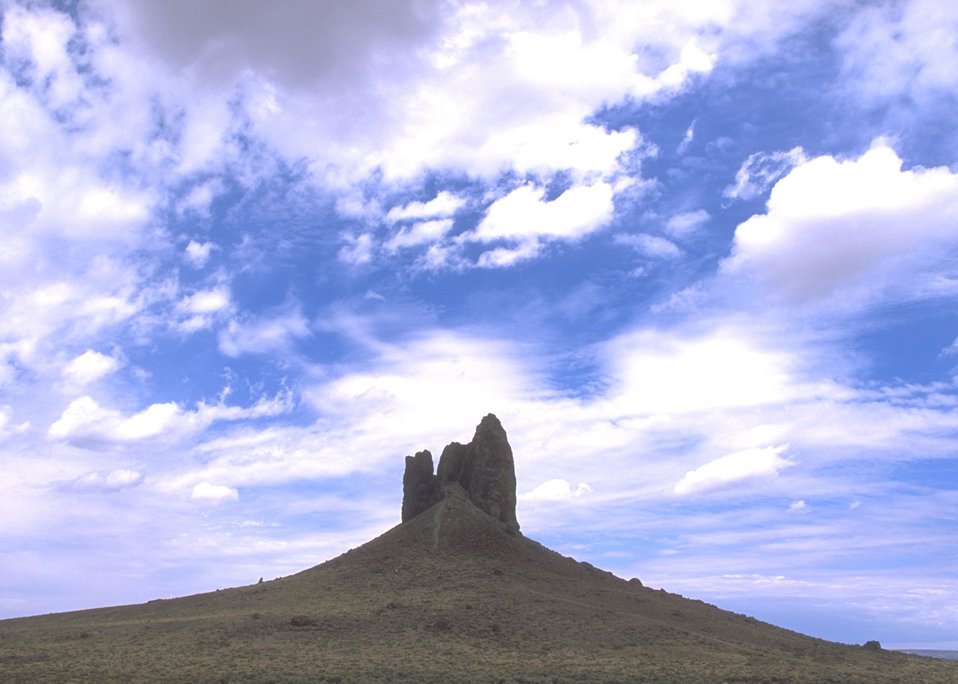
Boar's Tusk, Rock Springs Field Office.